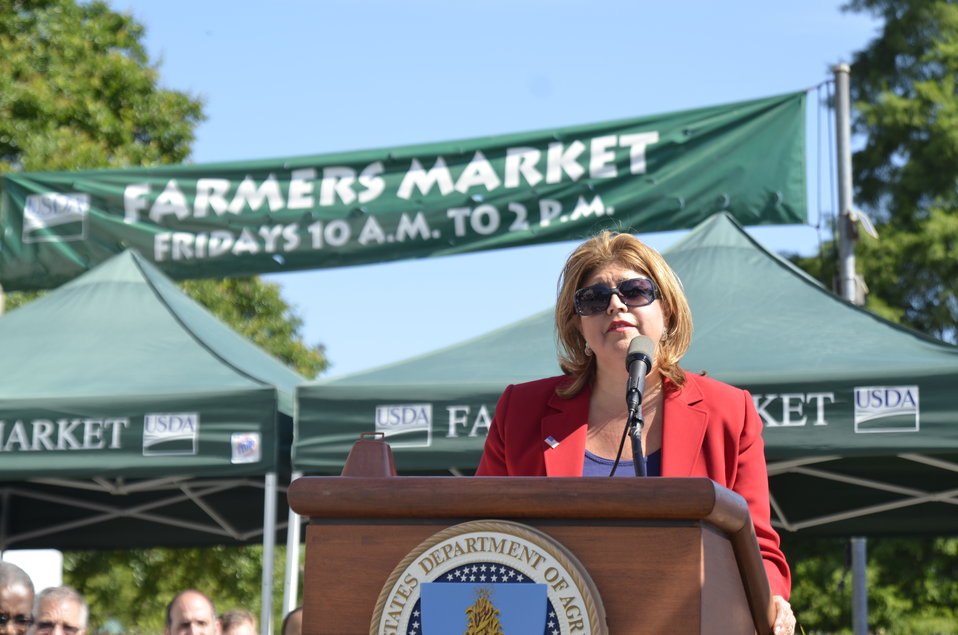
U.S. Department of Agriculture (USDA) Agricultural Market Service (AMS) Administrator Anne Alonzo speaks at the opening USDA’s 2014 Farmers Market in the east parking lot of USDA in Washington, D.C. on Friday, Jun. 6, 2014.